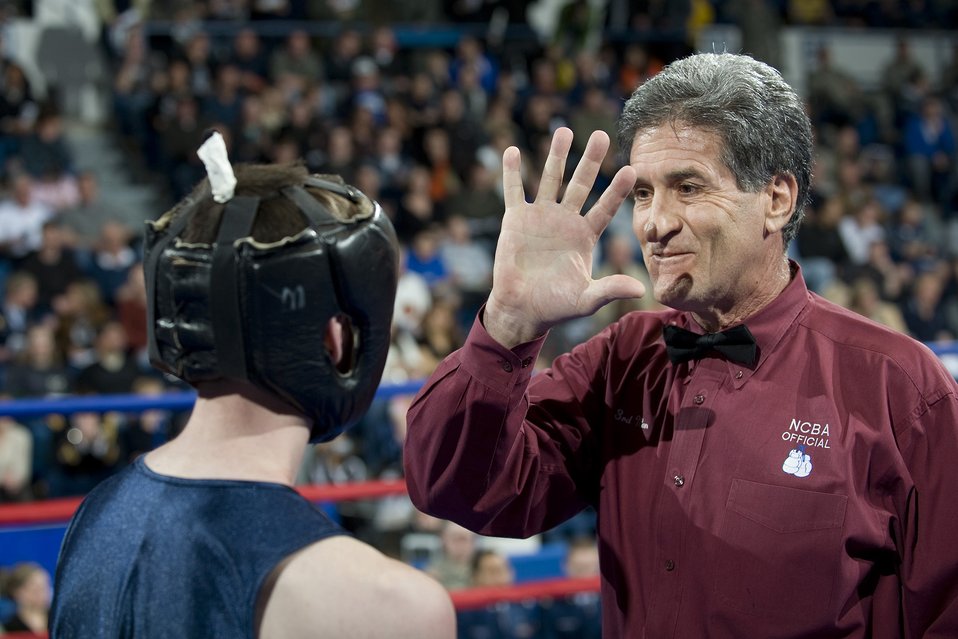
Academy Open Boxing Championship

Referee Vick Drakulich delivers a standing 8 count to a fighter during the Wing Open Championships held at the U.S. Air Force Academy's Clune Arena in Colorado March 5, 2010. Referees were present to ensure the safety of all boxers involved.